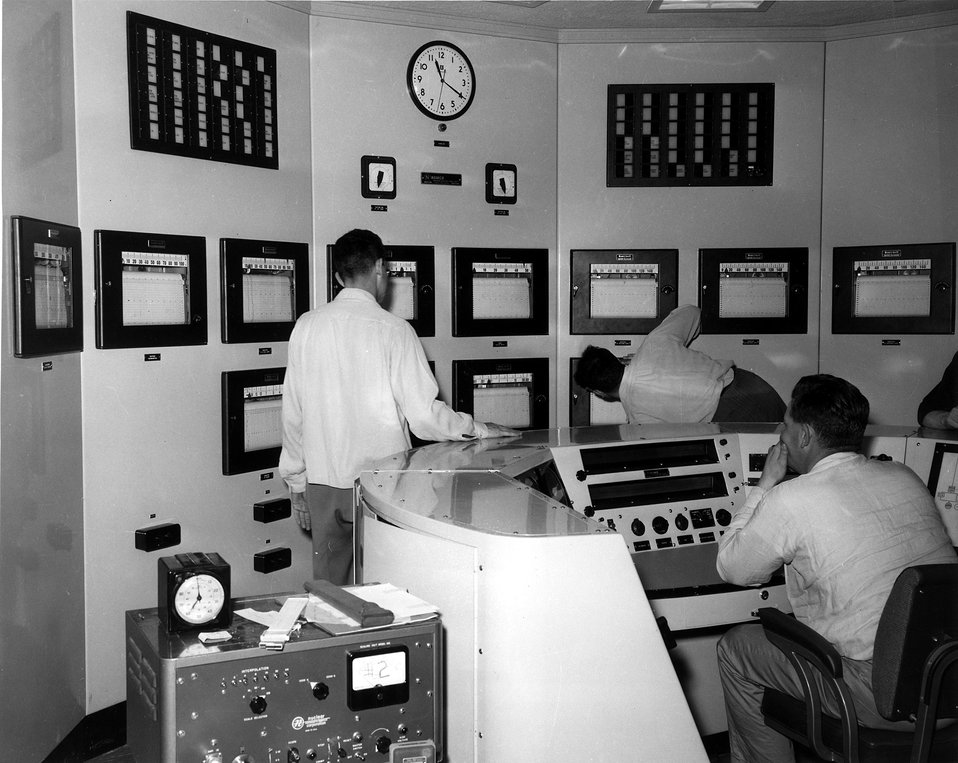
This photograph was taken in the control room of the Materials Testing Reactor seconds after it became critical Mar. 31, 1952. At the control panel are Dr. Marvin M. Mann, who was engineer at ORNL for the MTR, and who assisted the control group in starting the reactor; Steve Hanauer, instrument technician with ORNL. Seated at the operating console is F.L. McMillan, operations shift supervisor, Phillips Petroleum Co.; operating contractor. Circa 1952.